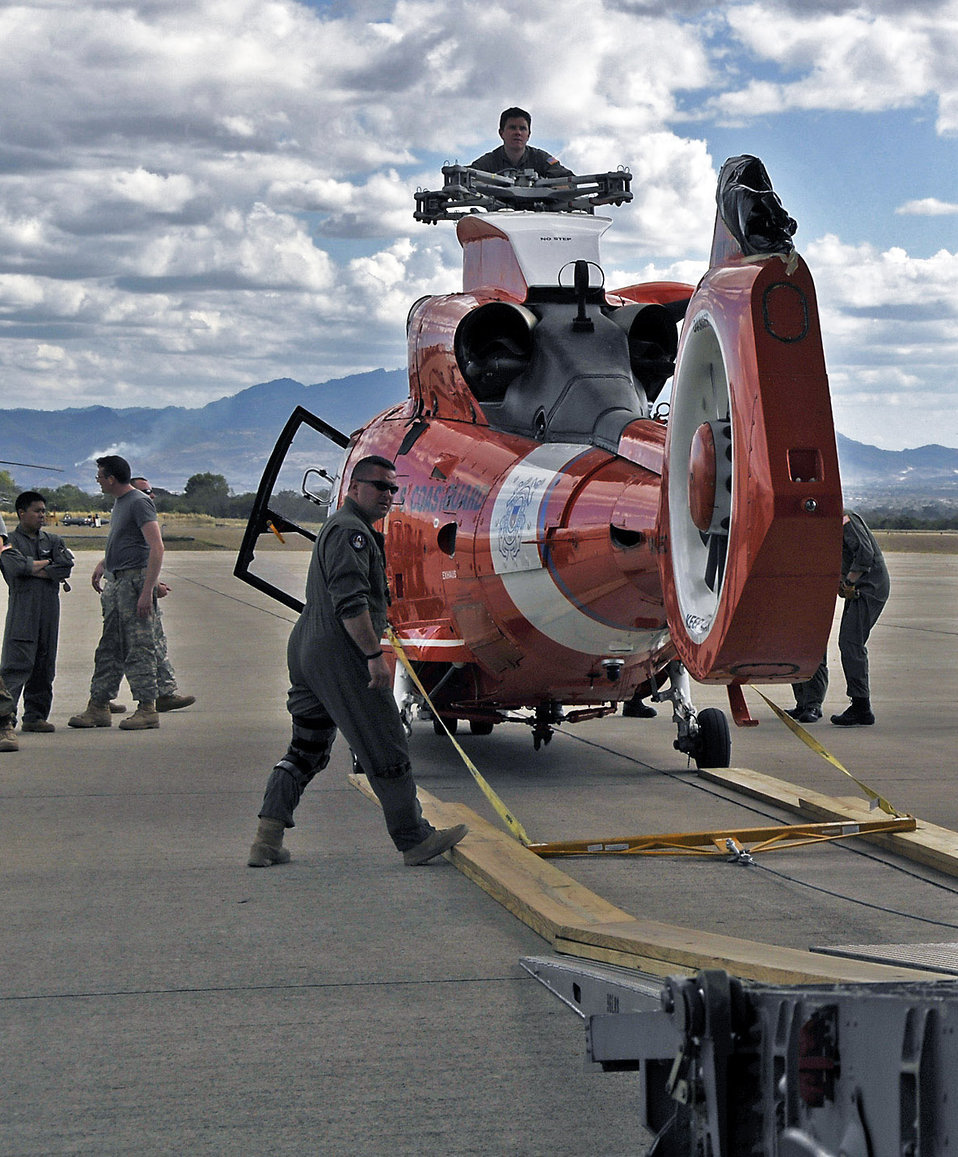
Moving the Coast Guard

Airmen prepare to load a Coast Guard helicopter aboard a C-17 Globemaster III April 7 at Charleston Air Force Base, S.C. Two helicopters were delivered to Central America for missions there. The C-17 aircrew is from the Air Force Reserve's 315th Airlift Wing from Charleston AFB.